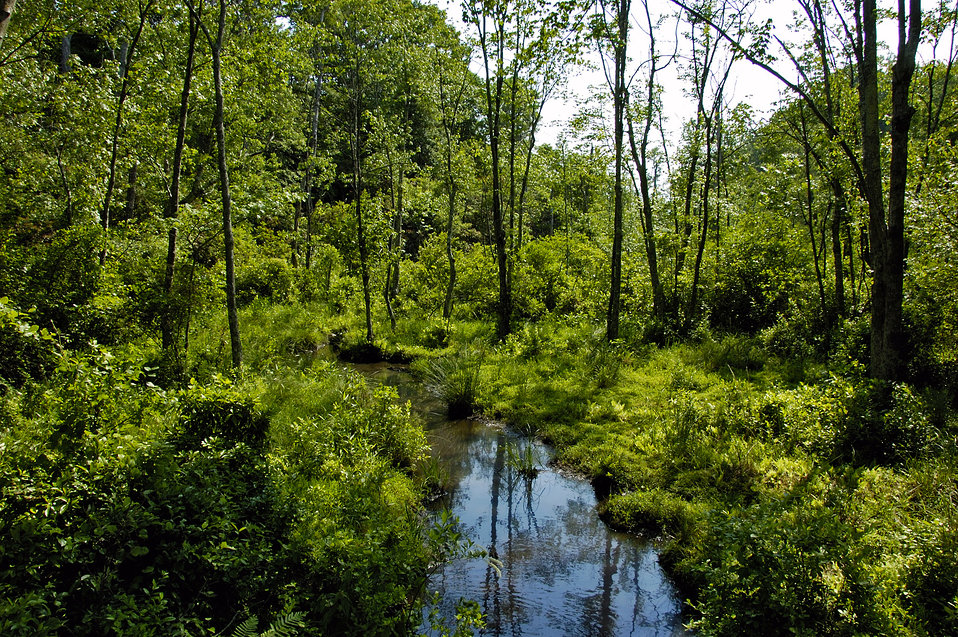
Forest

Mason Neck National Wildlife Refuge, VA.